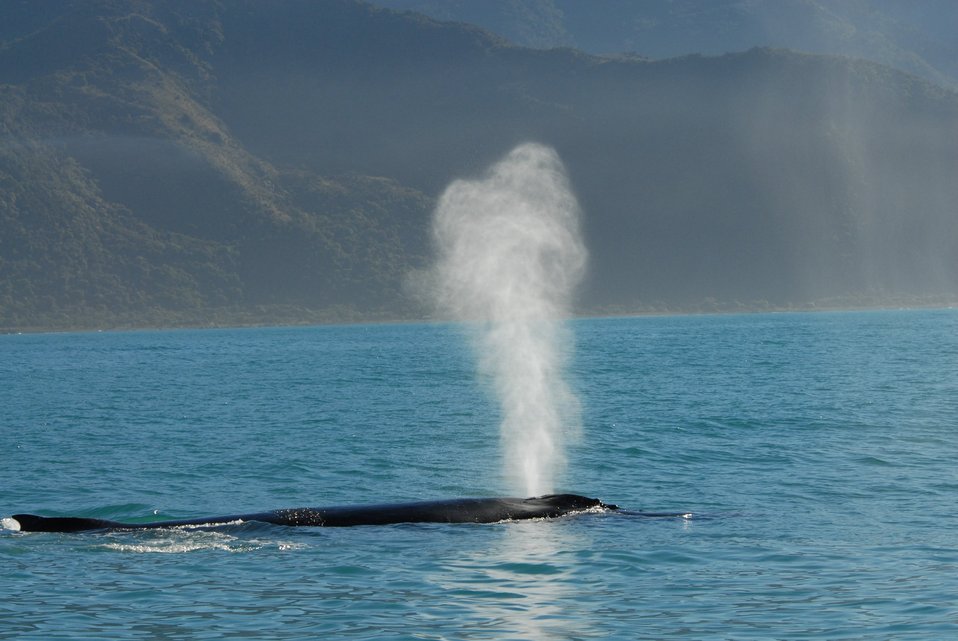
Humpbacks blowing - note the vertical exhalation.